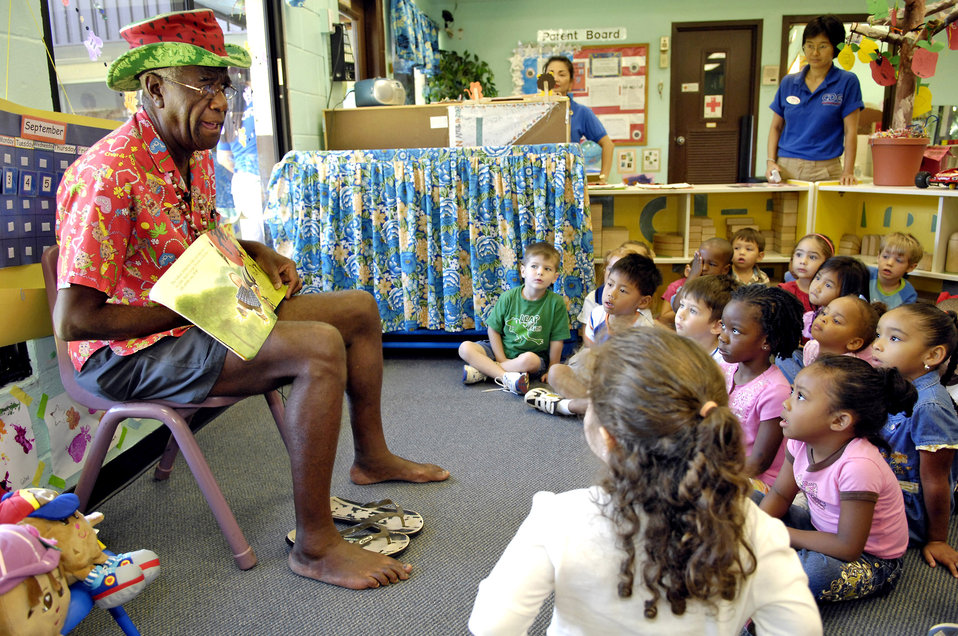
'Famous' former Airman recalls his service

Wally Amos reads a story to children at the Child Development Center Sept. 10 at Hickam Air Force Base, Hawaii. Mr. Amos is an actor, writer and original entrepreneur behind the Famous Amos cookie brand. He is an advocate of literacy and early childhood development, and served in the Air Force four years. He read to children as part of Air Force Week Honolulu.